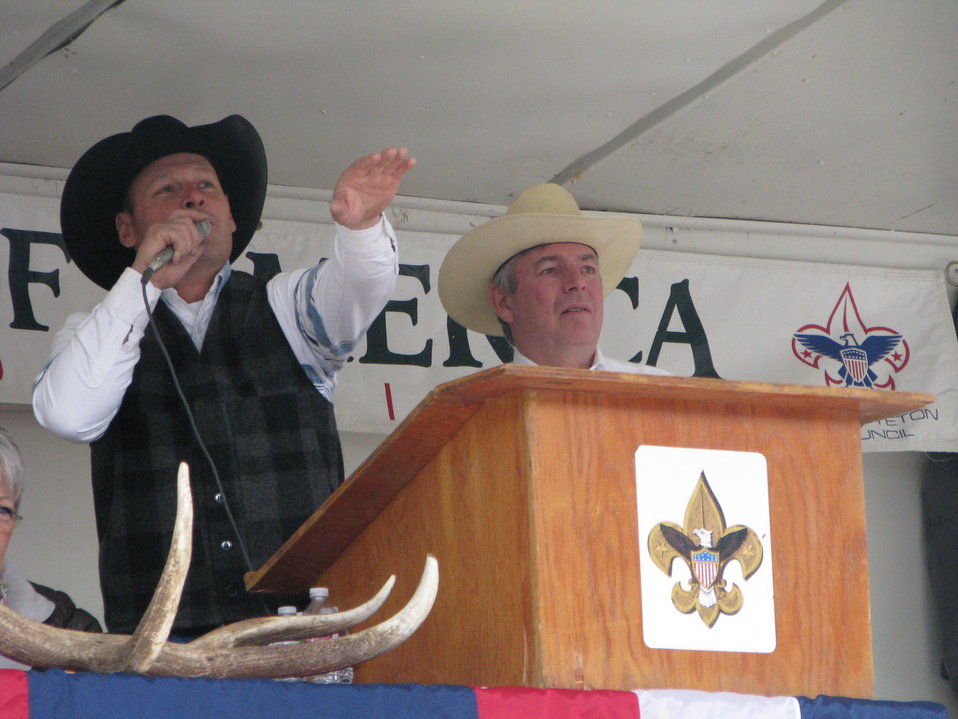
Auctioneers Hard at Work

Auctioneers Brian Taylor and Jim Loose play a critical role in the antler sale. Depending on the number of antlers, the auction lasts several hours.